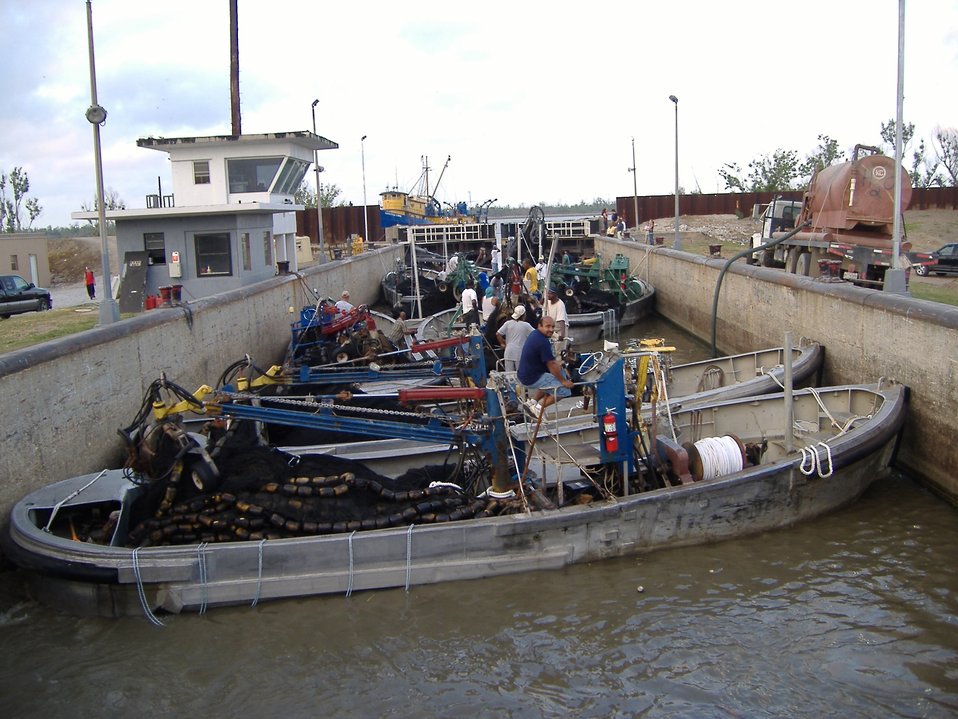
The aftermath of Katrina. Menhaden boat operational.